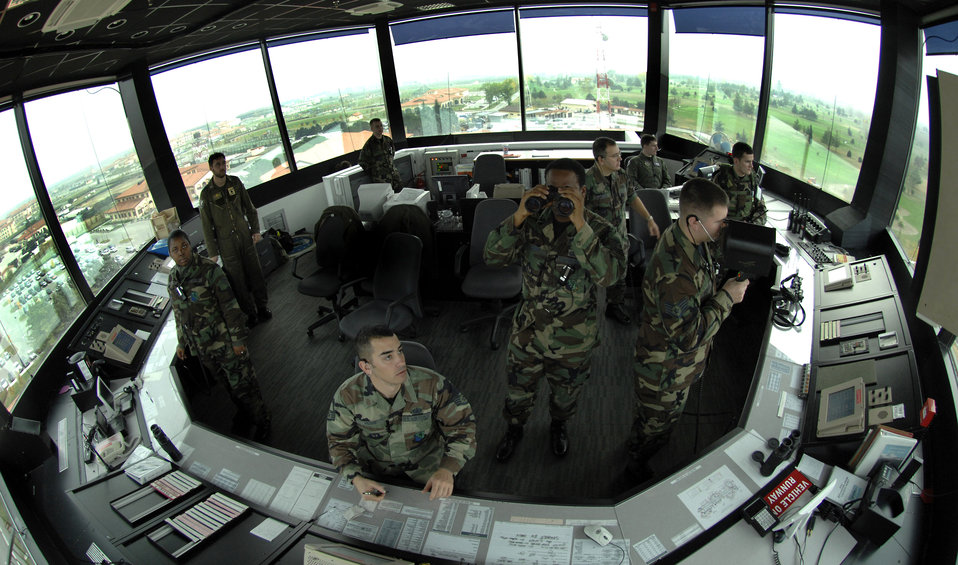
Tower stays on top of things

The air traffic control tower at Aviano Air Base, Italy, is abuzz with activity as Italian air force and U.S. Air Force controllers direct multiple flights of fighters Nov. 28.